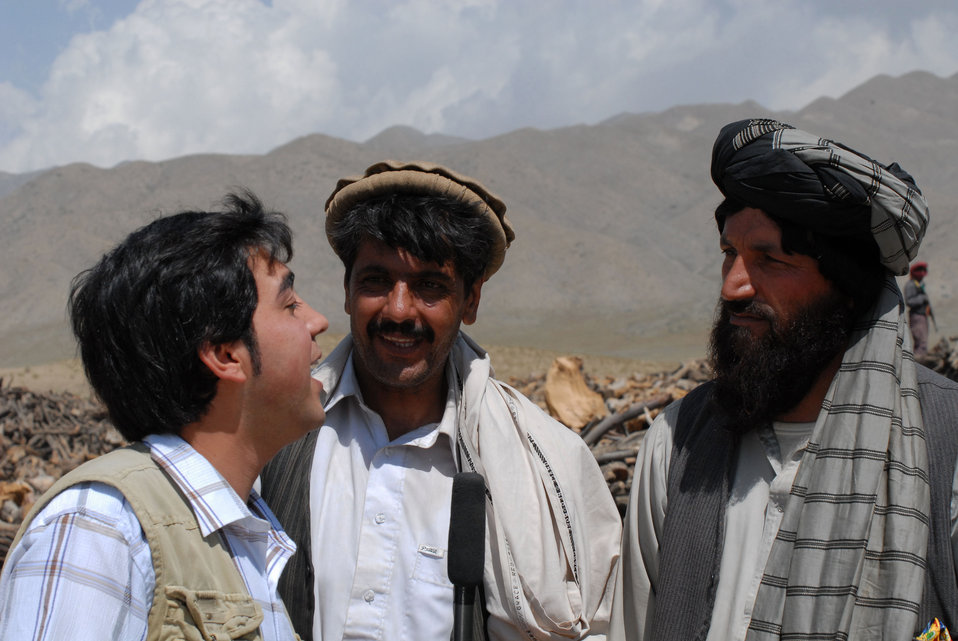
'On the Road' in Paktya Province